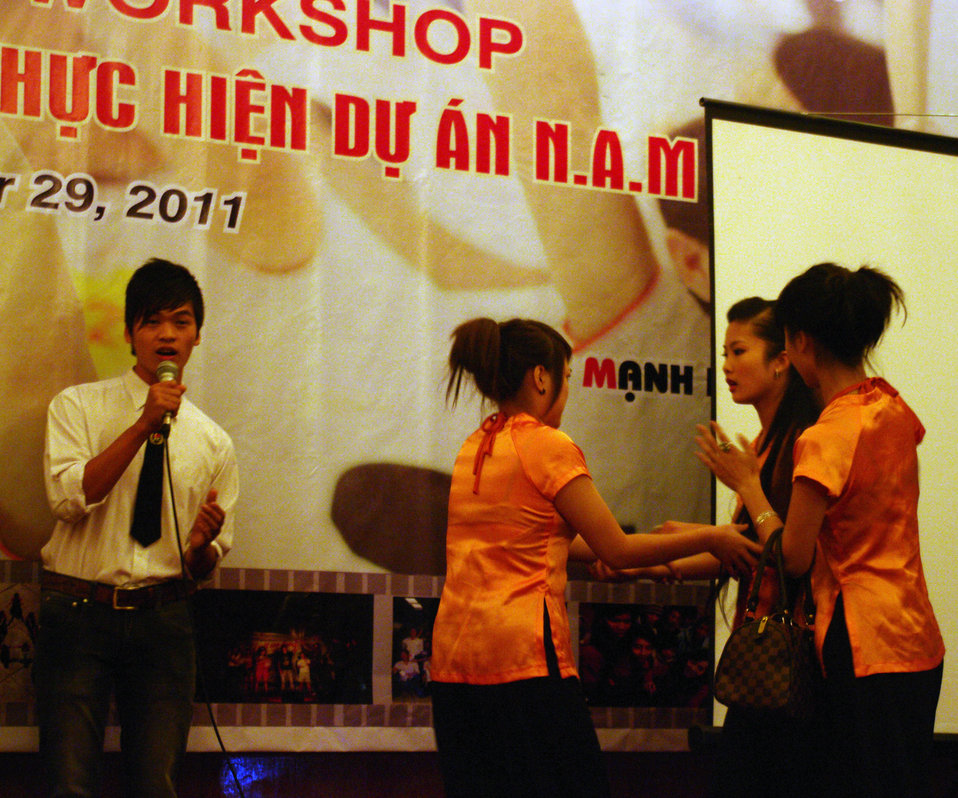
USAID Supports HIV Awareness among Street Youth and Young Men

Trainers and peer educators tell their stories on November 29, 2011, in Hanoi, Vietnam